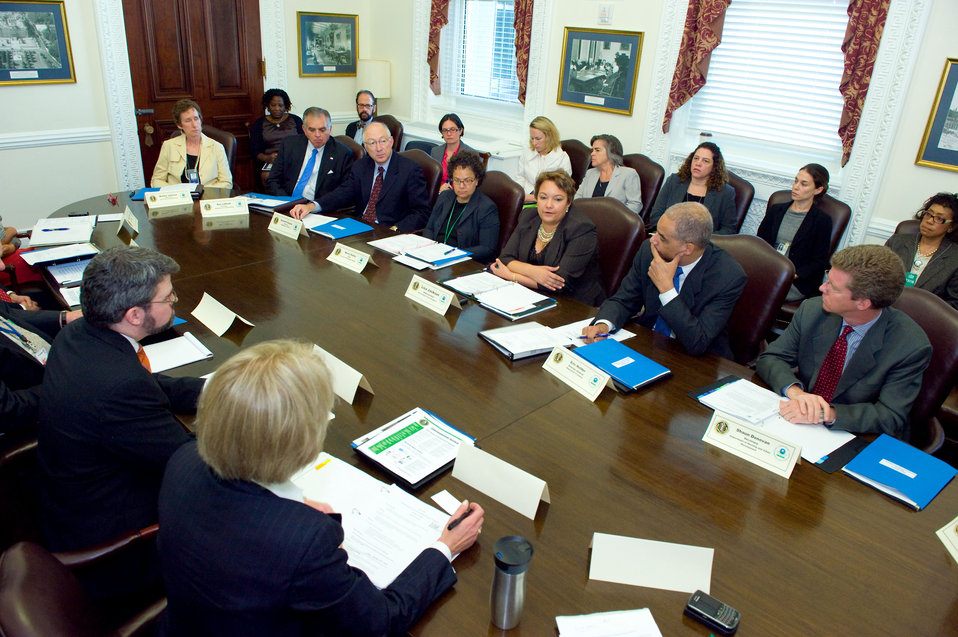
EPA Hosts Historic Meeting on Environmental Justice

Left to Right, Martha Johnson, Administrator, General Services Administration, Ray LaHood, Secretary, Department of Transportation, Kenneth Salazar, Secretary, Department of Interior, Nancy Sutley, Chair, Council on Environmental Quality, Lisa P. Jackson, Administrator, Environmental Protection Agency, Eric Holder, Attorney General, Shaun Donavan, Secretary, Department of Housing and Urban Development.

Read more about this historic meeting

Learn more about EPA